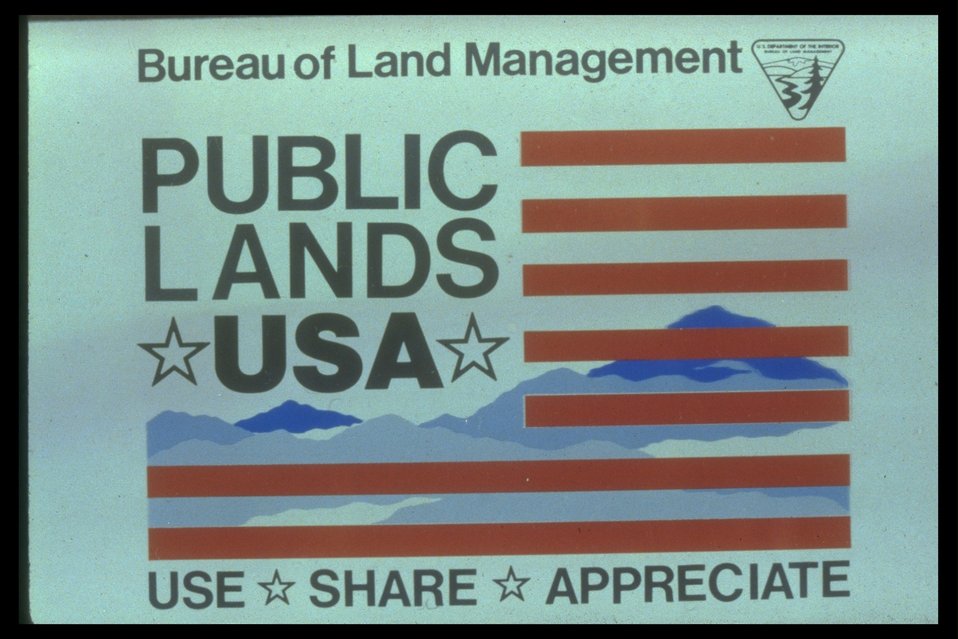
BLM Logo: Use, Share, and Appreciate logo. Public Lands USA.